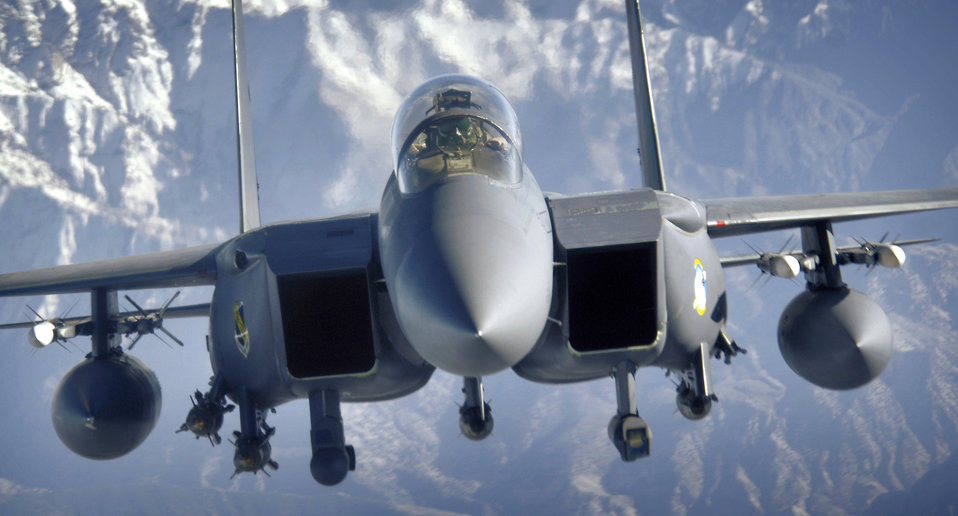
F-15 Strike Eagle

An F-15E Strike Eagle soars over the mountains of Afghanistan in support of Operation Mountain Lion April 12, 2006. The crew and fighter are deployed to the 336th Expeditionary Fighter Squadron in Southwest Asia from the 4th Fighter Wing at Seymour Johnson Air Force Base, N.C.